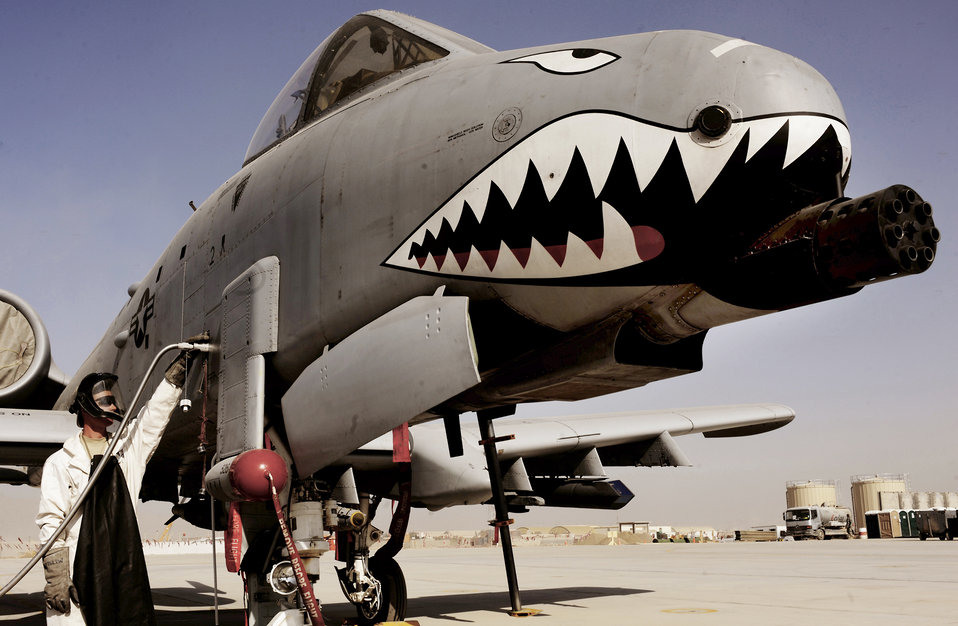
A-10C Thunderbolt II maintenance inspection

Staff Sgt. Tom Wilson fills an A-10C Thunderbolt II with liquid oxygen, Jan. 11, 2011, at Kandahar Airfield, Afghanistan. The 75th Expeditionary Fighter Squadron recently moved their assets to the other side of the flightline, the first of many moves toward consolidating the 451st Air Expeditionary Wing's missions. Sergeant Wilson is a crew chief assigned to the 451st Expeditionary Aircraft Maintenance Squadron.